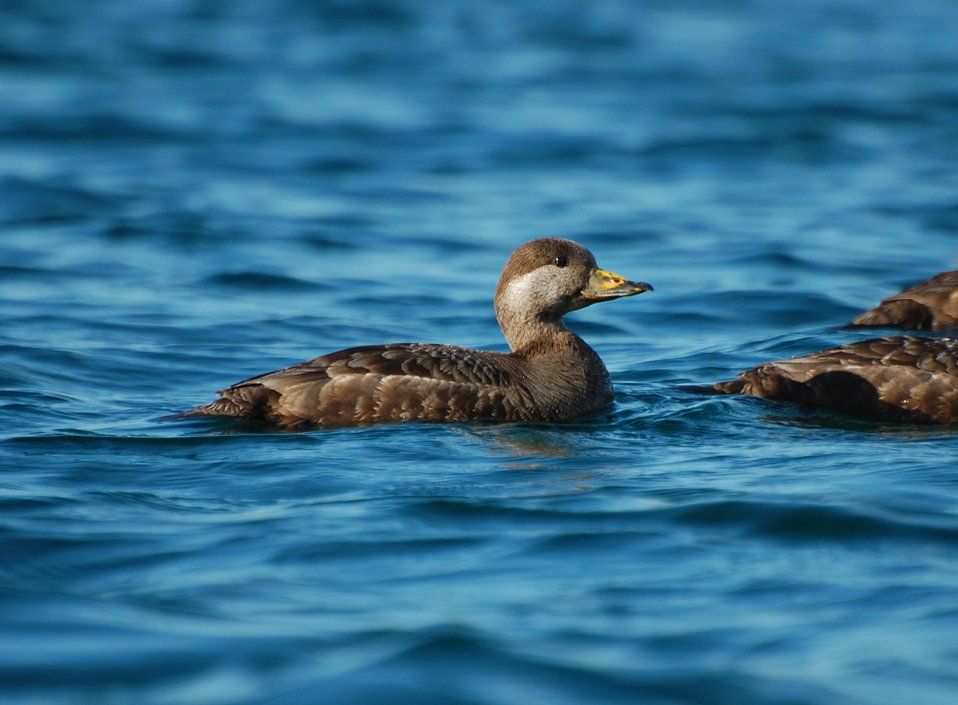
Black Scoter, Izembek National Wildlife Refuge